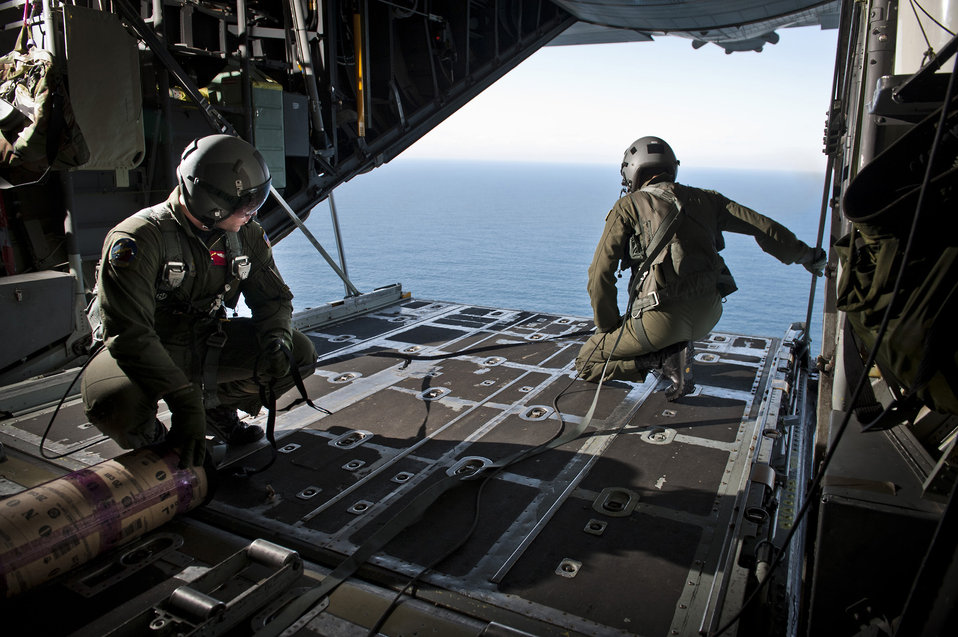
Monitoring ocean currents

Staff Sgt. Blake Landry (left) and Lt. Col. Dave Kincaid wait for the signal to deploy a buoy from a C-130 Hercules April 29, 2011, off the eastern coast of Japan. Sergeant Landry is a loadmaster assigned to the 36th Airlift Squadron at Yokota Air Base, Japan. Colonel Kincaid is the deputy commander of the 374th Operations Group at Yokota Air Base, Japan.